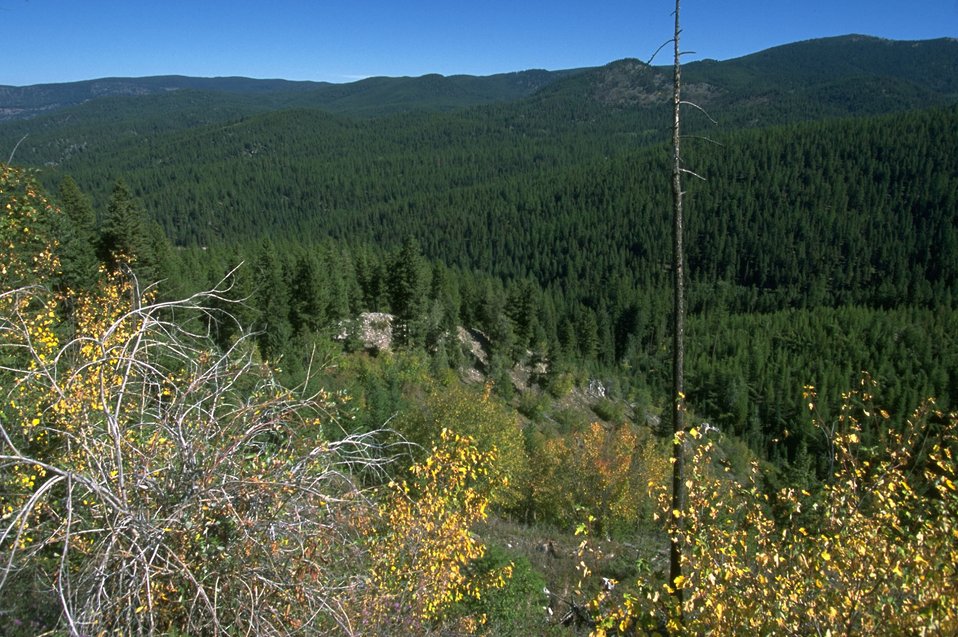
Garnet Back Country Byway view of Elk Creek drainage